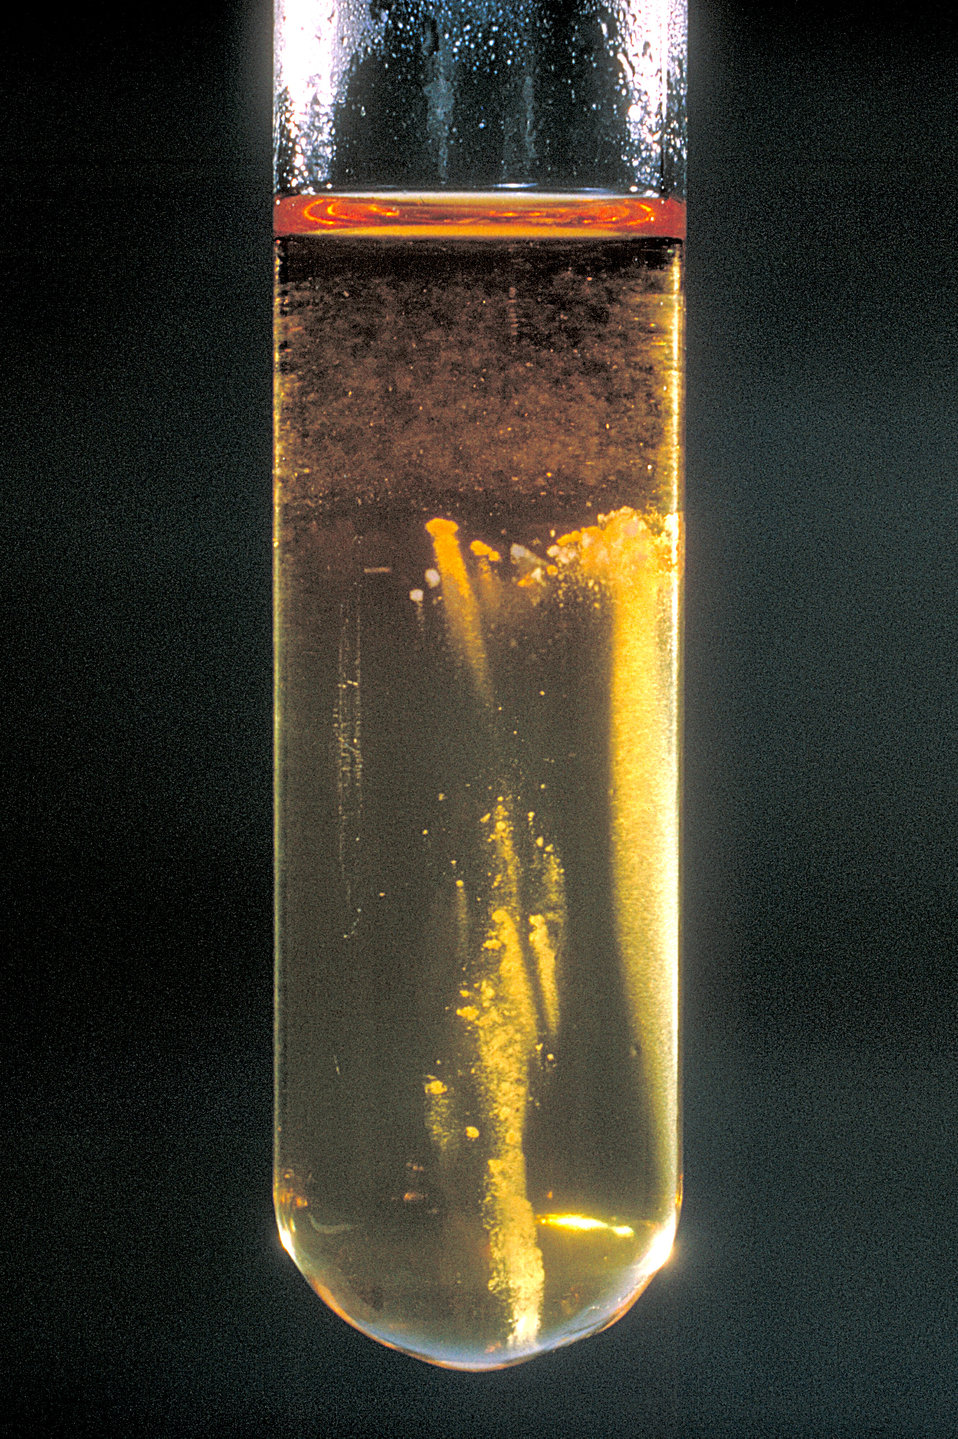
This is a thioglycollate broth culture of Actinomyces naeslundii; strain X600.